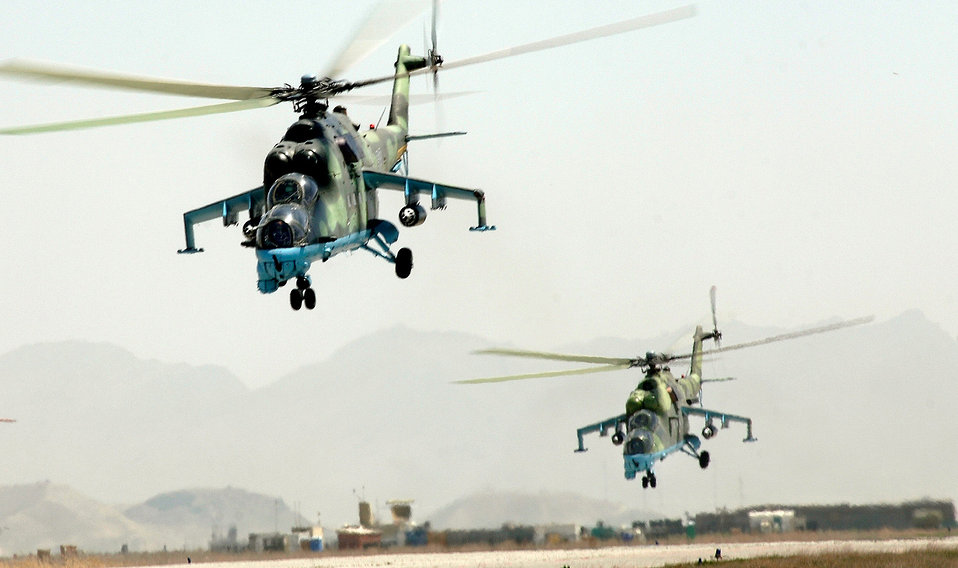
U.S. forces mentor Afghan Air Guard to 'stand on own'

Afghan National Air Corps MI-35 helicopters take off in a formation practice for the aerial parade in the upcoming Afghan National Day in Kabul. Air Force mentors assigned to Defense Reform Directorate Air Division under Combined Security Transition Command - Afghanistan provide guidance to soldiers with the Maintenance Operations Group for the ANAC.